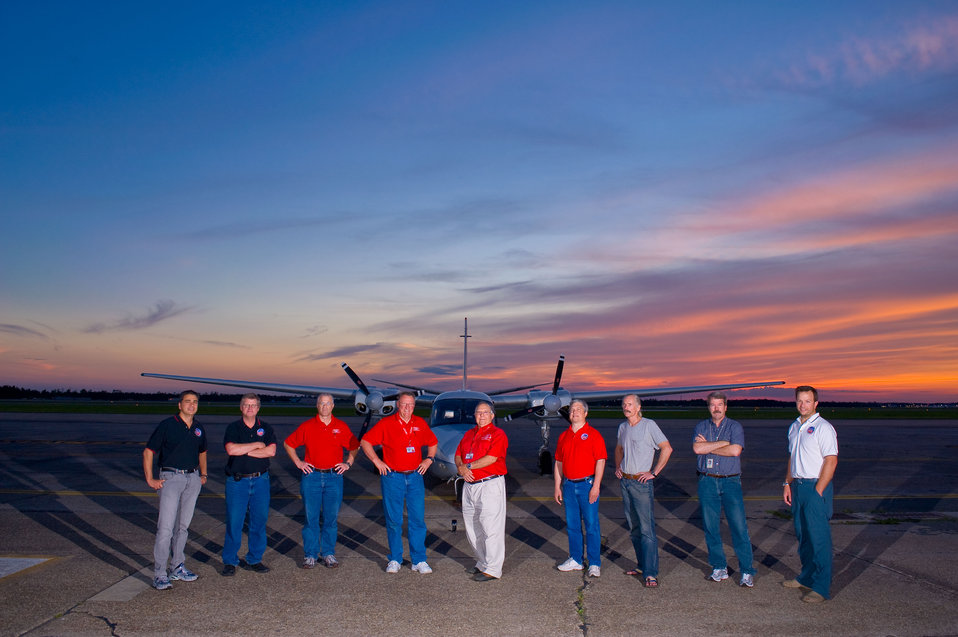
ASPECT team members

May 9, 2010 - U.S. EPA’s ASPECT aircraft team members. Left to right, John Cardarelli, Team Leader Mark Thomas, Rich Rousseau, Dave Wheeler, Paul Fletcher, Bob Kroutil, Paul Lewis,Tim Curry, and Paul Kudarauskas.